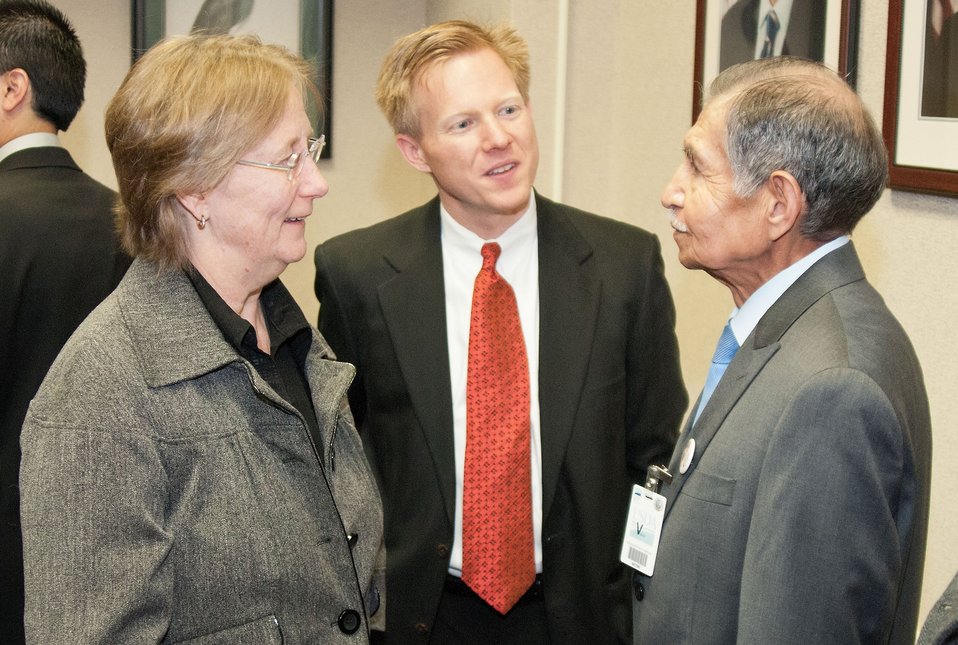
Carole Jett (left) Deputy Chief of Staff for Agriculture Secretary Tom Vilsack, Max Finberg (center), Director, Center for Faith Based and Neighborhood Partnerships congratulate Rogelio Lona, United Farm Workers of America, Salinas, California as one of the 2012 White Champions of Change at a Breakfast Reception sponsored by the Office of Advocacy and Outreach and Office of the Assistant Secretary for Civil Rights at the United States Department of Department of Agriculture In Washington, D.C., on Thursday, March 29, 2012. The Champions of Change were being recognized for their leadership, community service and service to others prior to being honored at the White House in Honor of Cesar Chavez Day. Chavez was a Mexican-American labor leader who used non-violent methods to fight for the rights of migrant farm workers in the southwestern United States. Chavez founded the Cesar Chavez Foundation, a group that advocates for the rights of farm workers, acting to increase wages and improve the working conditions and safety of farm workers.